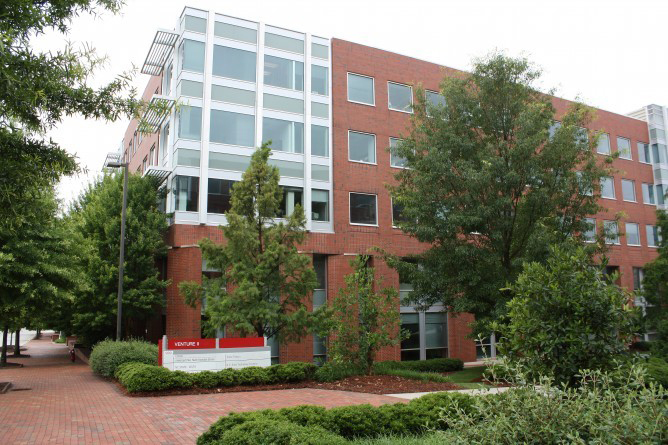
This is an image of the U.S. Department of Agriculture's (USDA) climate research facility on Centennial Campus at North Carolina State University in Raleigh, NC.